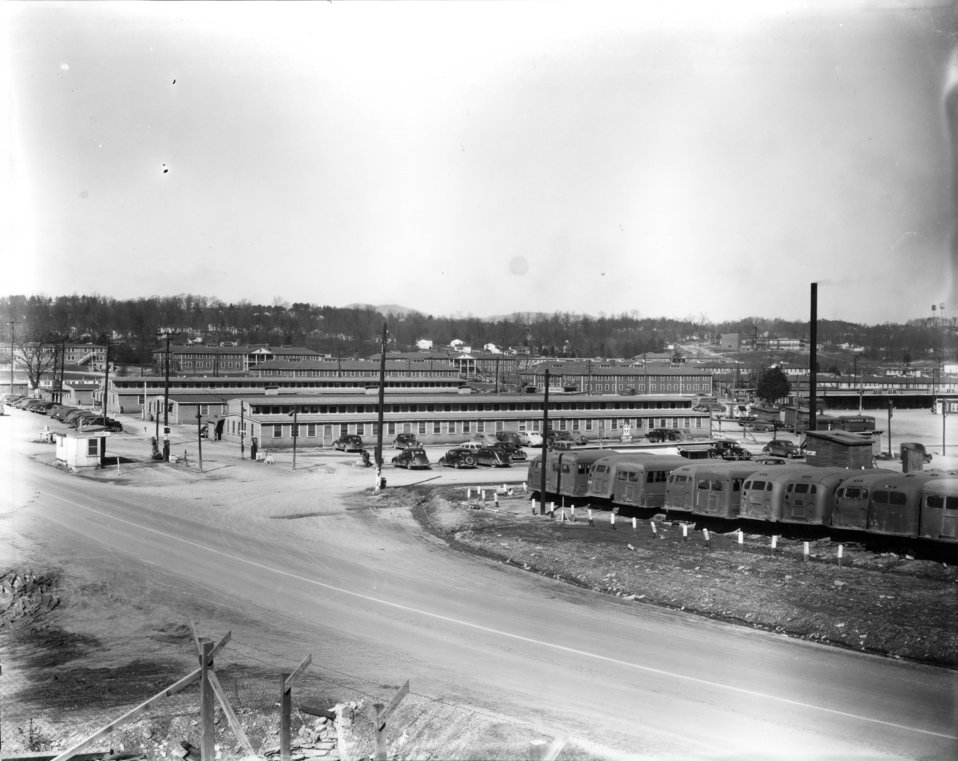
Services at Oak Ridge